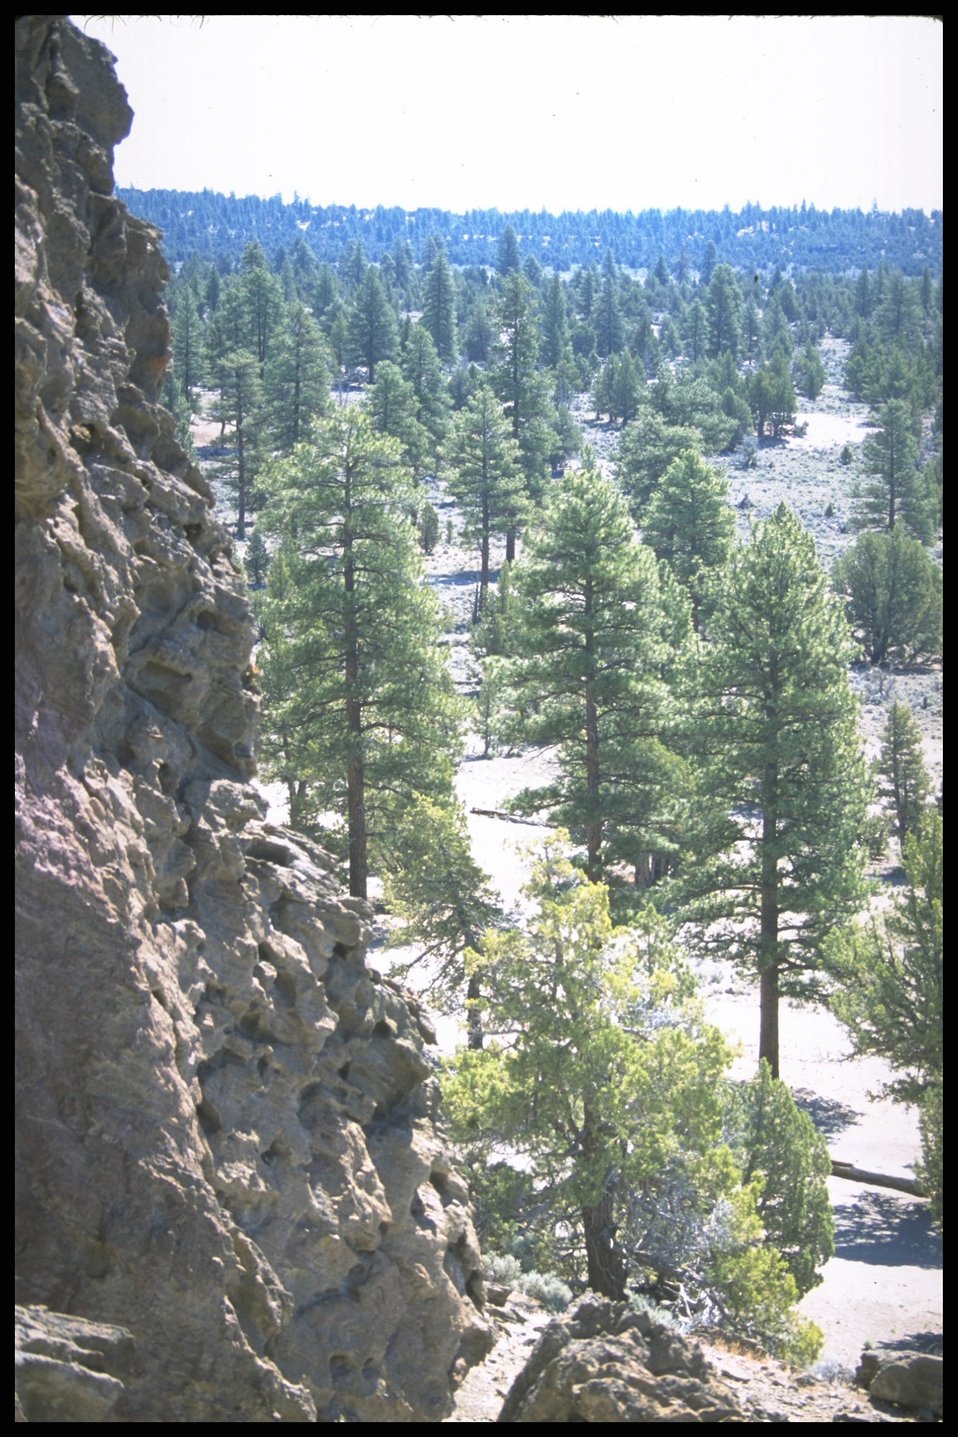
Scenic view of Lost Forest, Lakeview District.